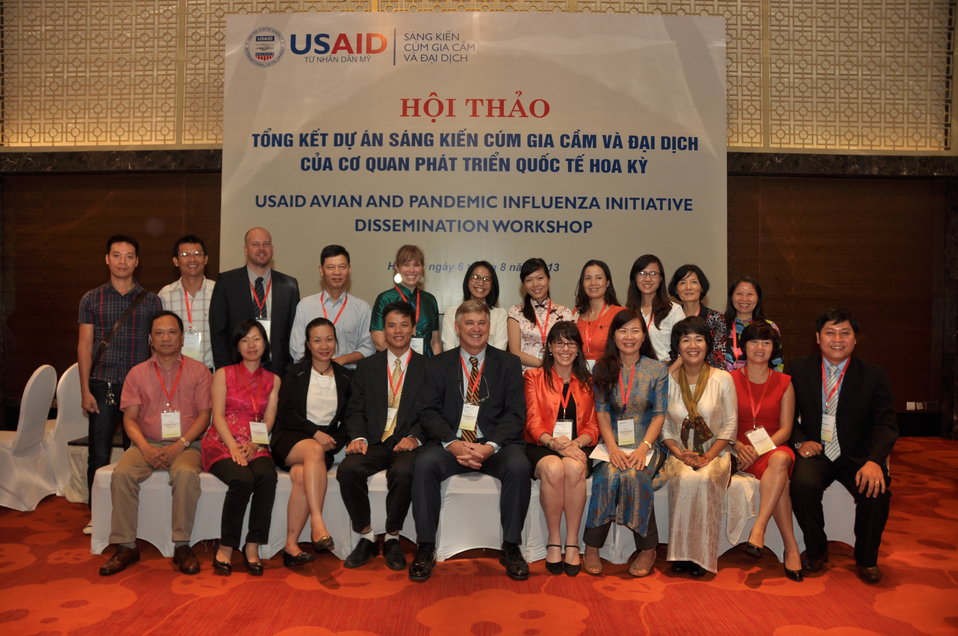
USAID Avian and Pandemic Influenza Initiative

Dissemination Workshop
Hanoi, August 6, 2013.